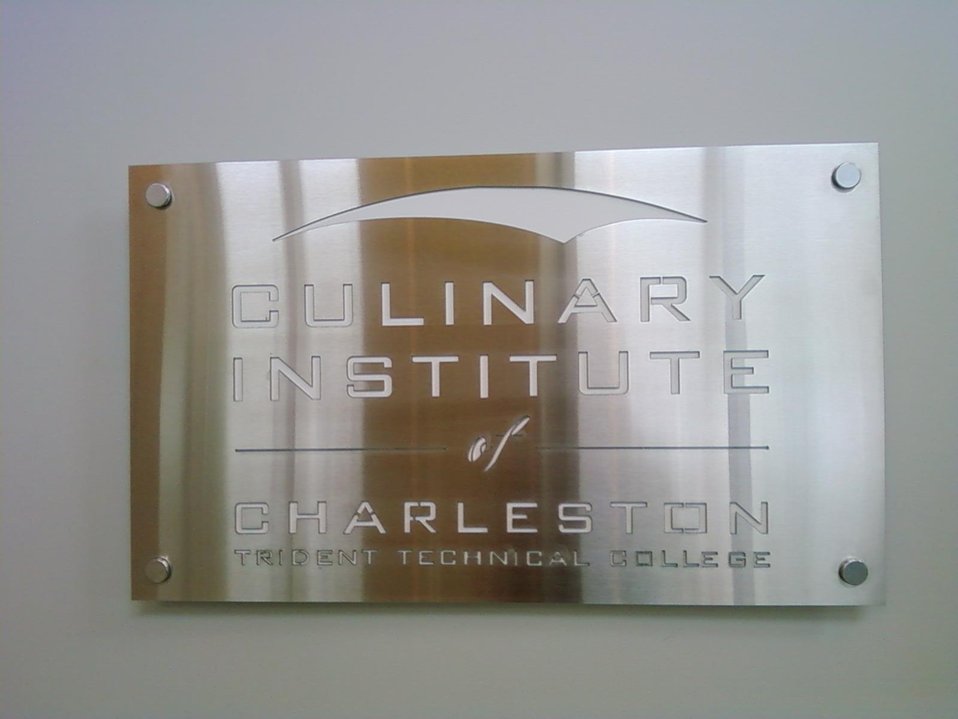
SC event 13

Broadband Field Hearing, in Charleston, South Carolina. 10-06-09